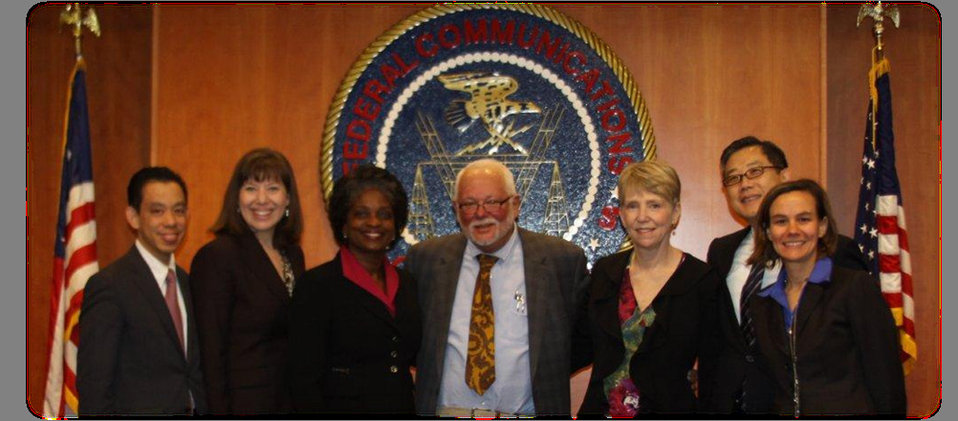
Geoffrey G. Why, Angela Kronenberg, Commissioner Clyburn, Commissioner Landis, Laura Breeden, Kalun Lee and Garnet Hanly